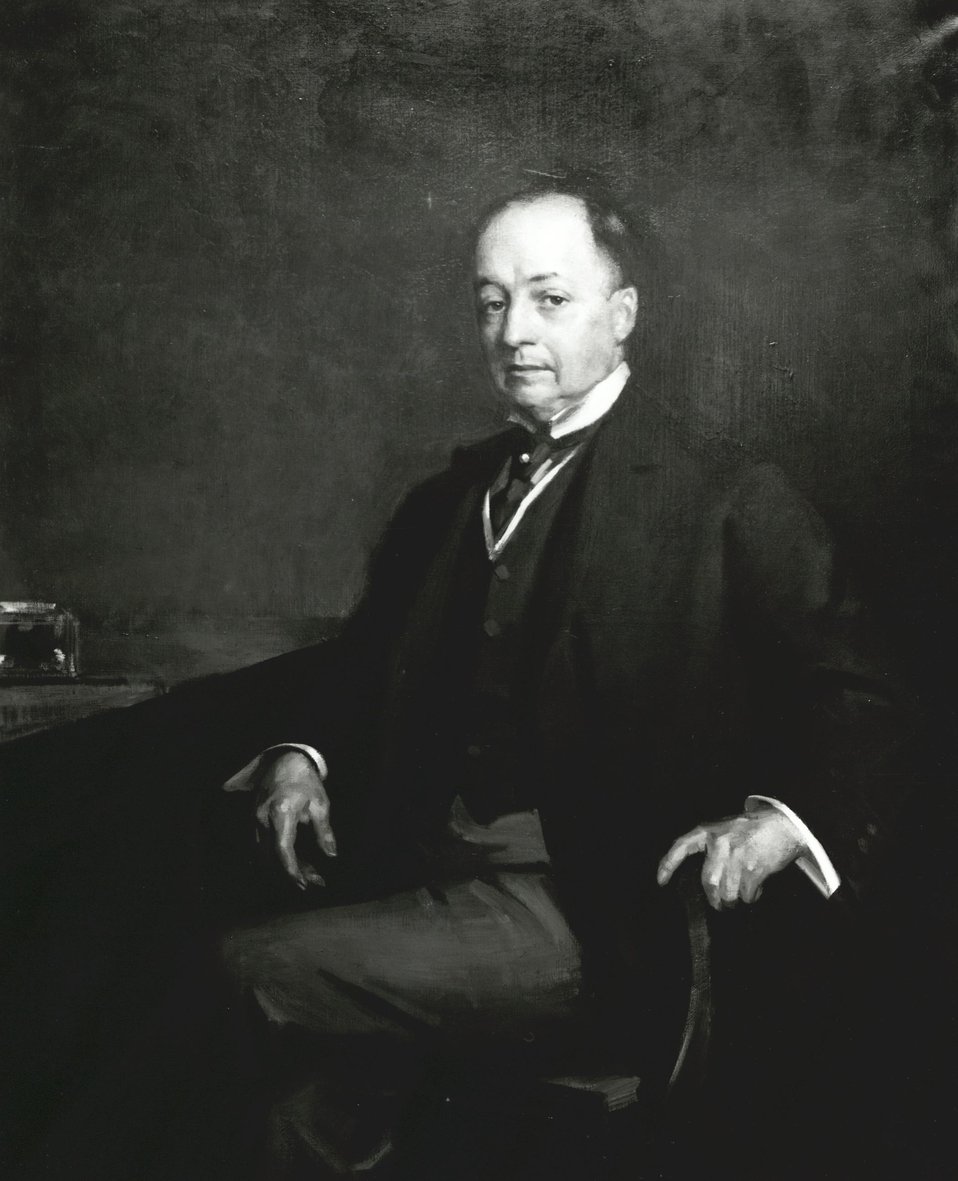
Philander C. Knox, U.S. Secretary of State, March 6, 1909 to March 5, 1913